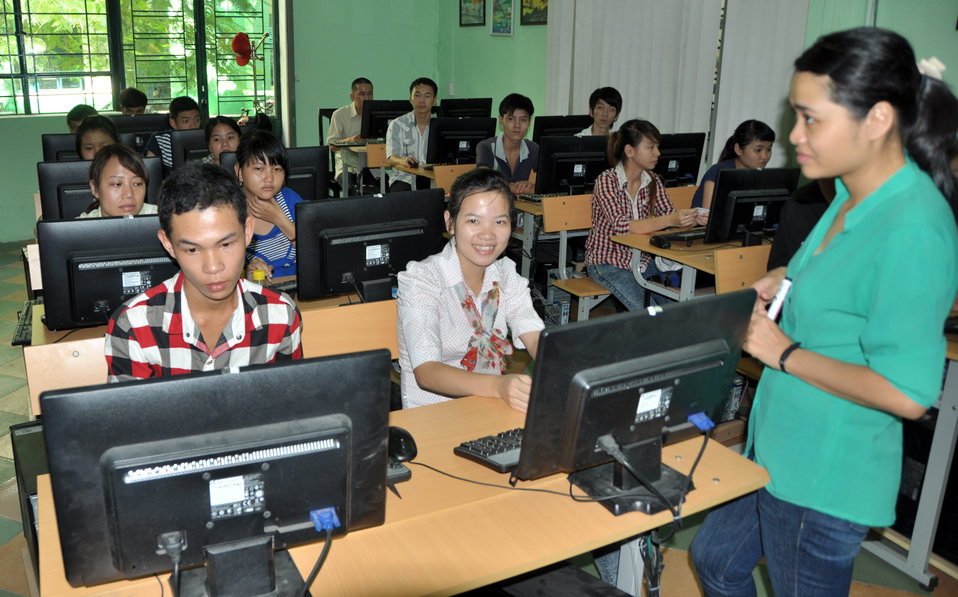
USAID Visits IT Training Program for People with Disabilities at Dong A University

Danang, Vietnam
July 17, 2013